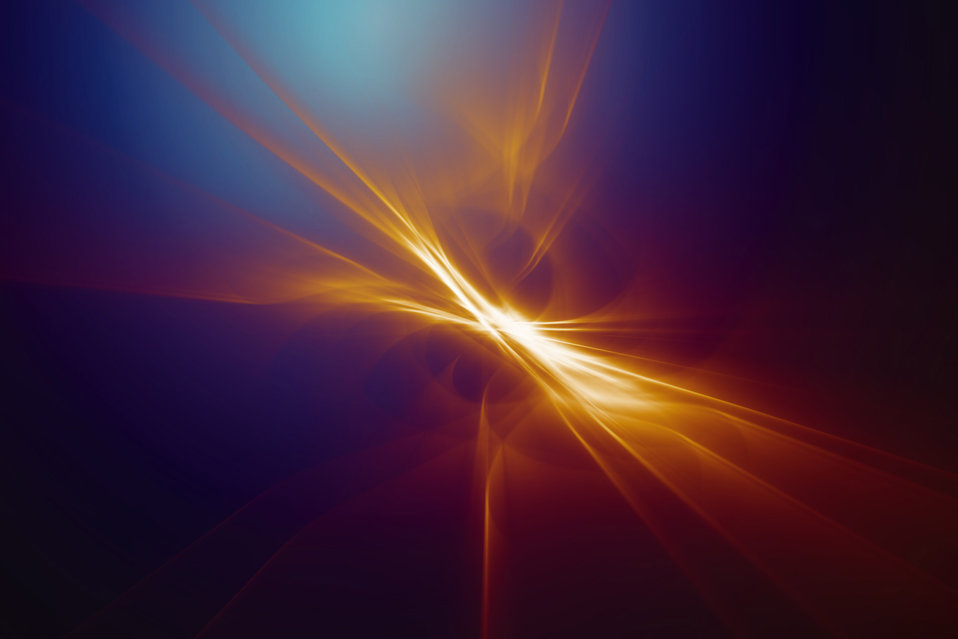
Abstract background in high resolution.